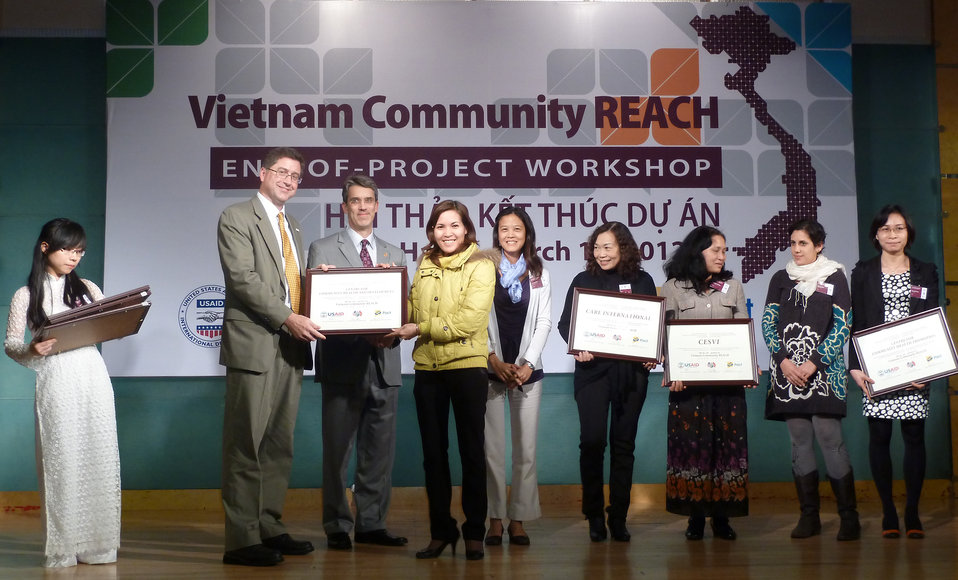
USAID, PEPFAR, and Pact award certificates to local and international partners for their work in addressing HIV in Vietnam

Community REACH project close-out with USAID and implementing partner, Pact